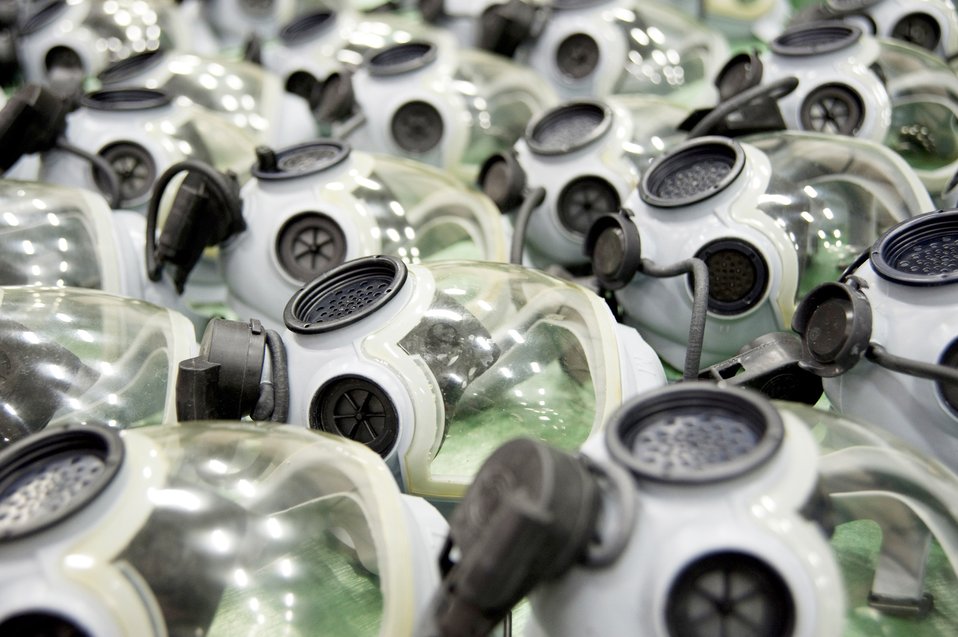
Got gas?

Dozens of gas masks lie in a basin after being washed and turned in at the 35th Logistics Readiness Squadron supply warehouse Nov. 3, 2009, at Misawa Air Base, Japan. The masks were redistributed to Defense Department organizations that still use this type of mask.